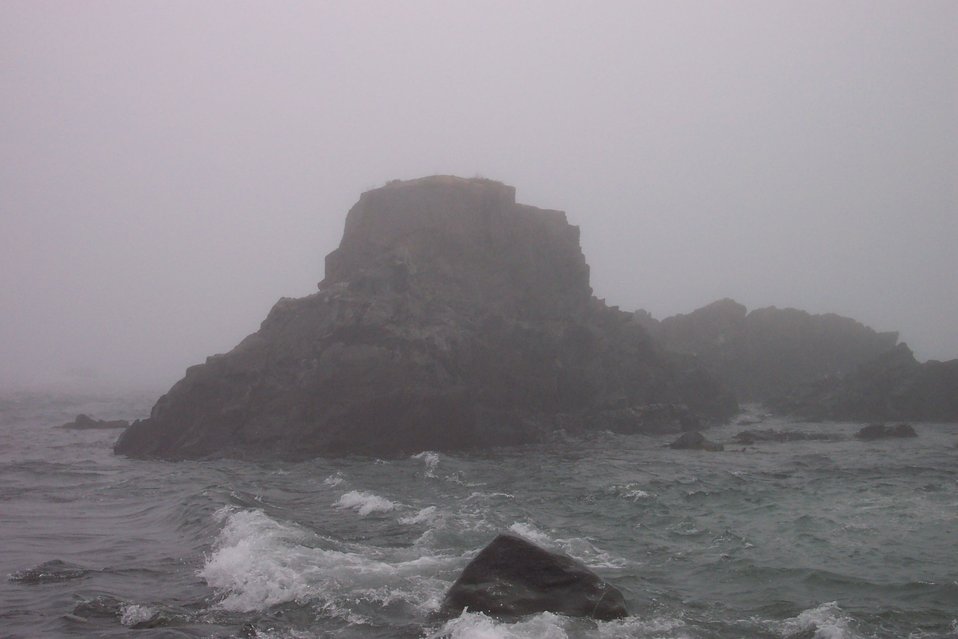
Sail Rock, just offshore from West Quoddy Head.